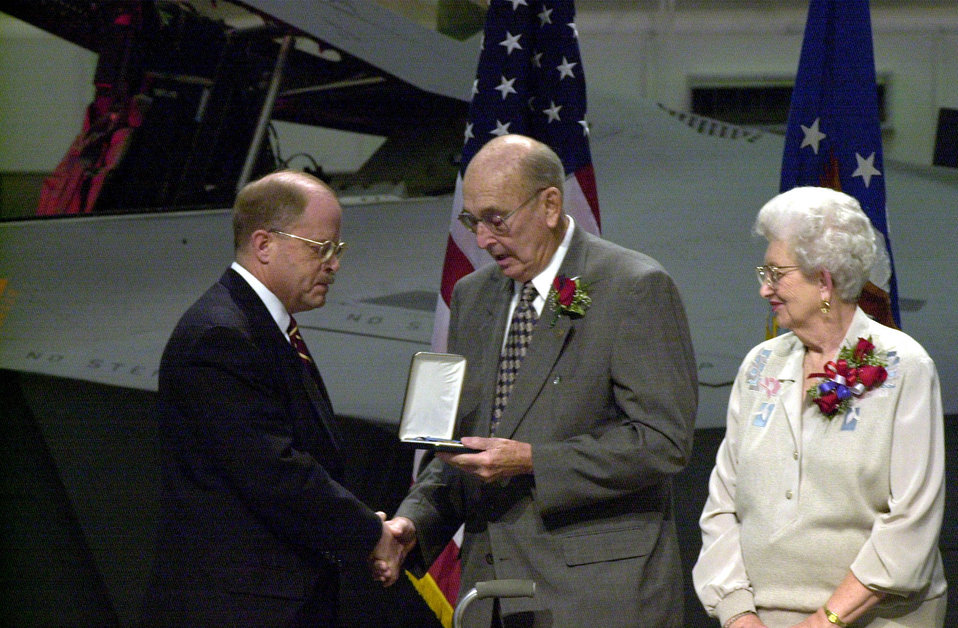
Medal of Honor

WRIGHT-PATTERSON AIR FORCE BASE, Ohio -- Alice Pitsenbarger (right) observes as her husband, William F. Pitsenbarger (center), accepts the Medal of Honor on his son's behalf from Secretary of the Air Force Whit Peters during a ceremony Dec. 8, here.